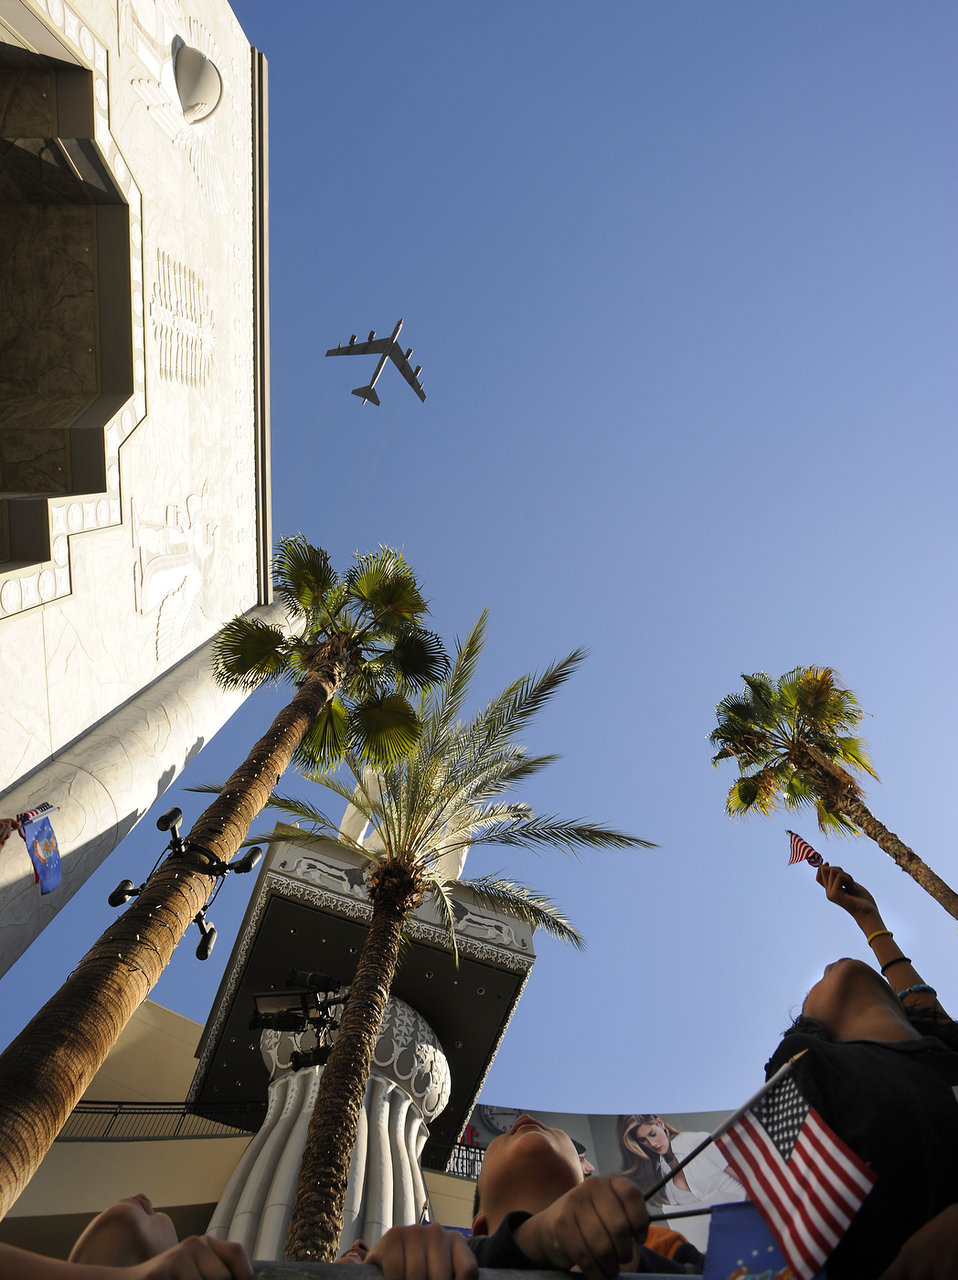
Air Force Week kicks off in Los Angeles

A B-52 Stratofortress provides a flyby down Hollywood Boulevard on Nov. 14 and over the Hollywood and Highland Plaza in Los Angeles for the opening ceremonies of Air Force Week-Los Angeles. The ceremonies include performances by the Air Force Honor Guard Drill Team and the Air Force Band of the Golden West with flyovers by several different Air Force aircraft and interactive expos. Air Force Week-Los Angeles is Nov. 14 to 21 and has events throughout the area.